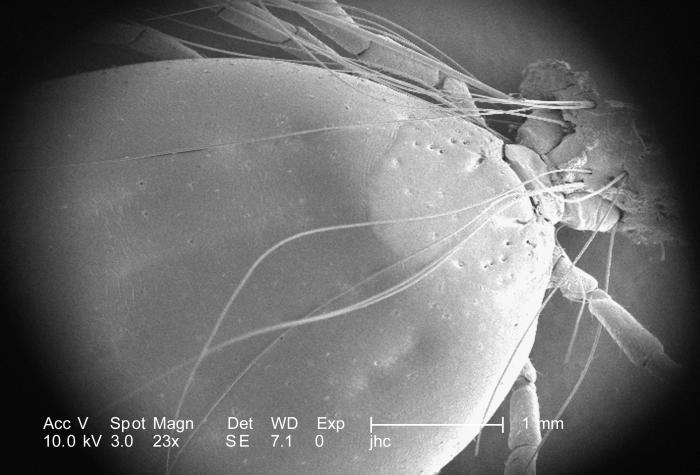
Under a low magnification of 23X, this scanning electron micrographic (SEM) image depicted a dorsal view of an unidentified engorged female tick, which had been extracted from the skin of a pet cat. Note the presence of some of the cat's fur, along with some of its skin tissue in which the tick's gnathosoma was still embedded, while it had been obtaining a blood meal from its feline host. Also worthy of note, is the subtle demarcation of the 'scutum', or chitinous 'shield' on the tick's back, signifying that this was, indeed, a female. Note in PHIL 9959 and 9960, that the entire dorsum of that tick's abdomen is covered by its scutum, categorizing it as a male. In female Ixodid-species ticks, the scutum only partially covers the dorsal abdomen. Ticks belong to the Phylum Arthropoda, due to the fact that they maneuver upon jointed ( 'Arthro') legs ('poda'), as well as the Class Arachnida, for they've eight of these legs, unlike insects, which use six legs to move about.